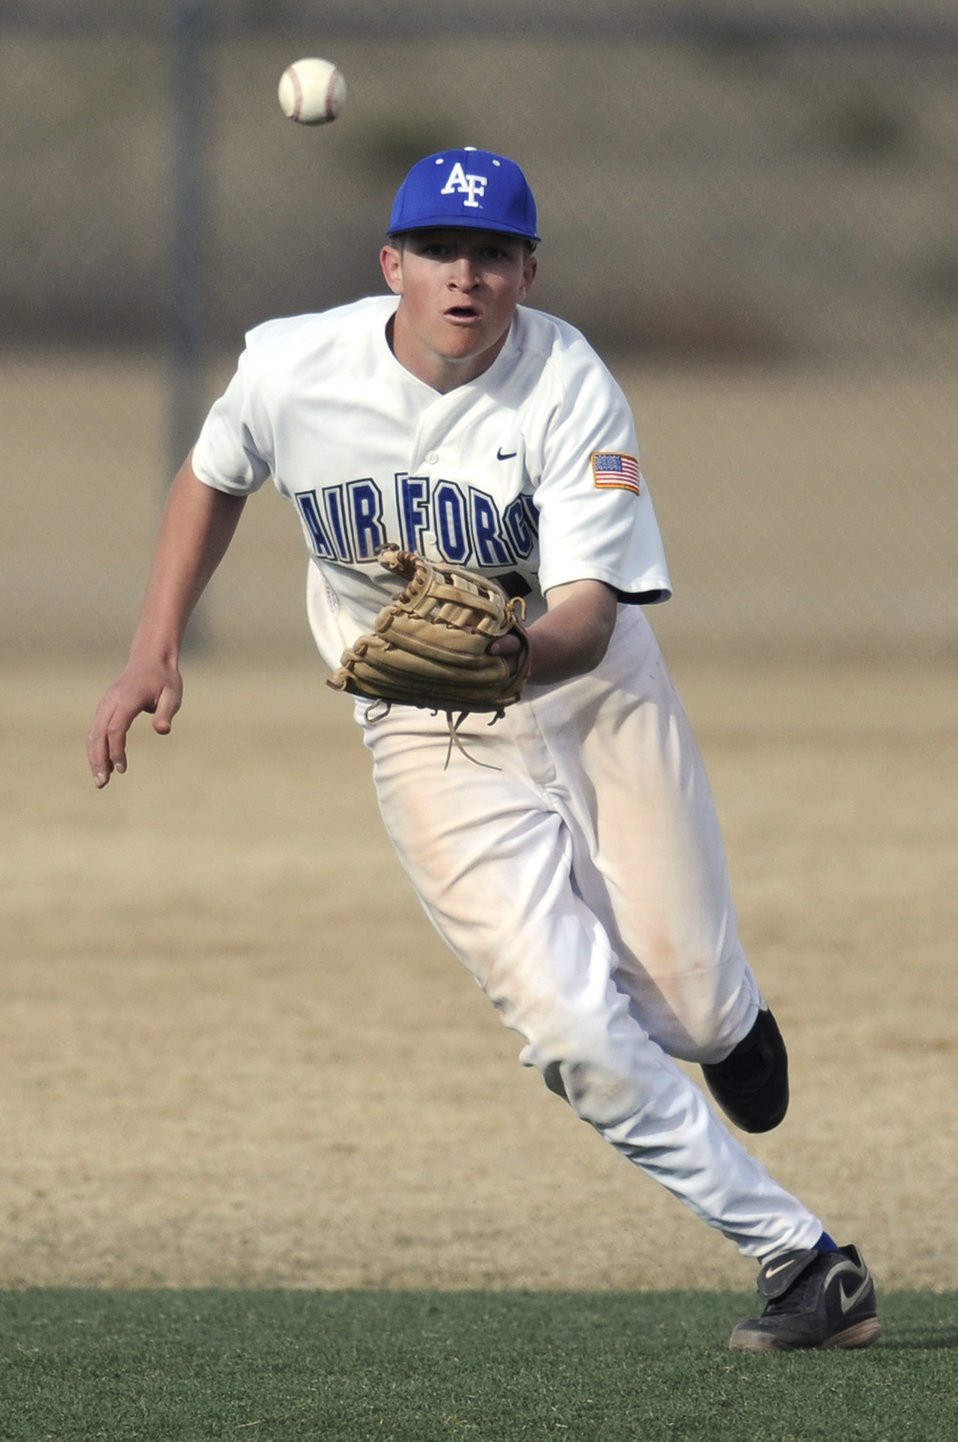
US Air Force Academy, CO

Sophomore shortstop Vai Schierholtz fields a grounder during the 11-7 win against Colorado Christian at Falcon Field Mar 17. The win improved the Falcons record to 6-9 on the season. Air Force returns to action with a three-game series at UNLV starting Friday, March 20.